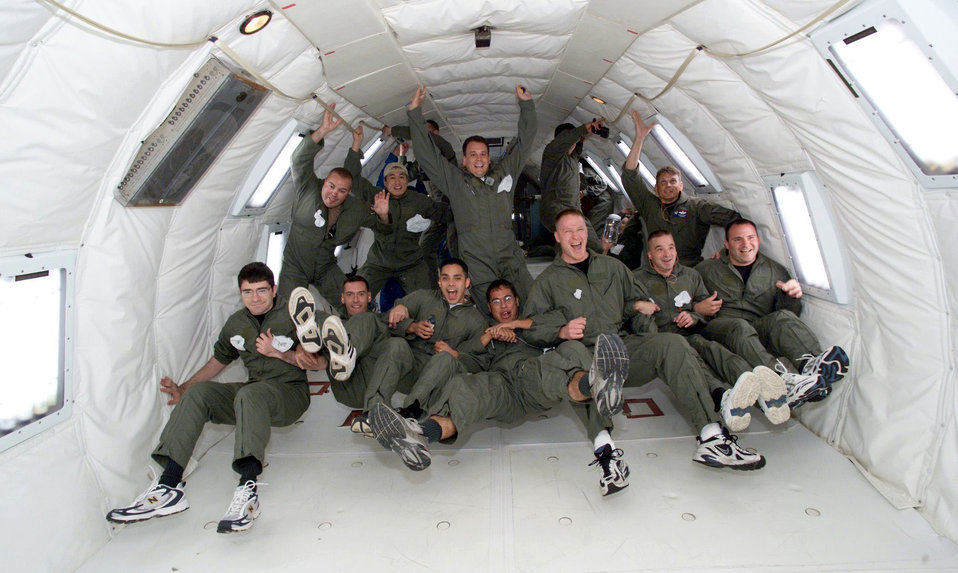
All aboard the comet

EDWARDS AIR FORCE BASE, Calif. -- Students in the Aerospace Vehicle Test Course experience zero gravity during a ride in the NASA KC-135 also known as the